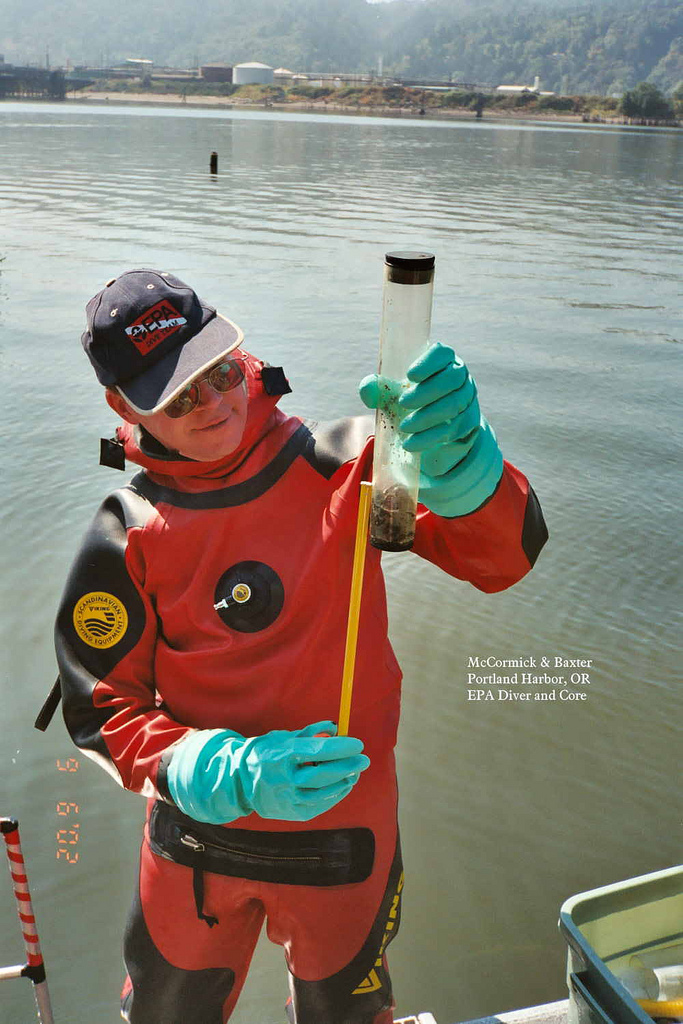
Sampling Underwater

EPA diver Bruce Duncan inspects a sediment core taken from the Willamette River.

The core was sent to a lab for analysis to support the Portland Harbor cleanup.

Photo by Rene Fuentes, EPA.

For more information about these dives, see:
Inspecting sed core
www.epa.gov/region10/pdf/diveteam/McCormick and Baxter 20...